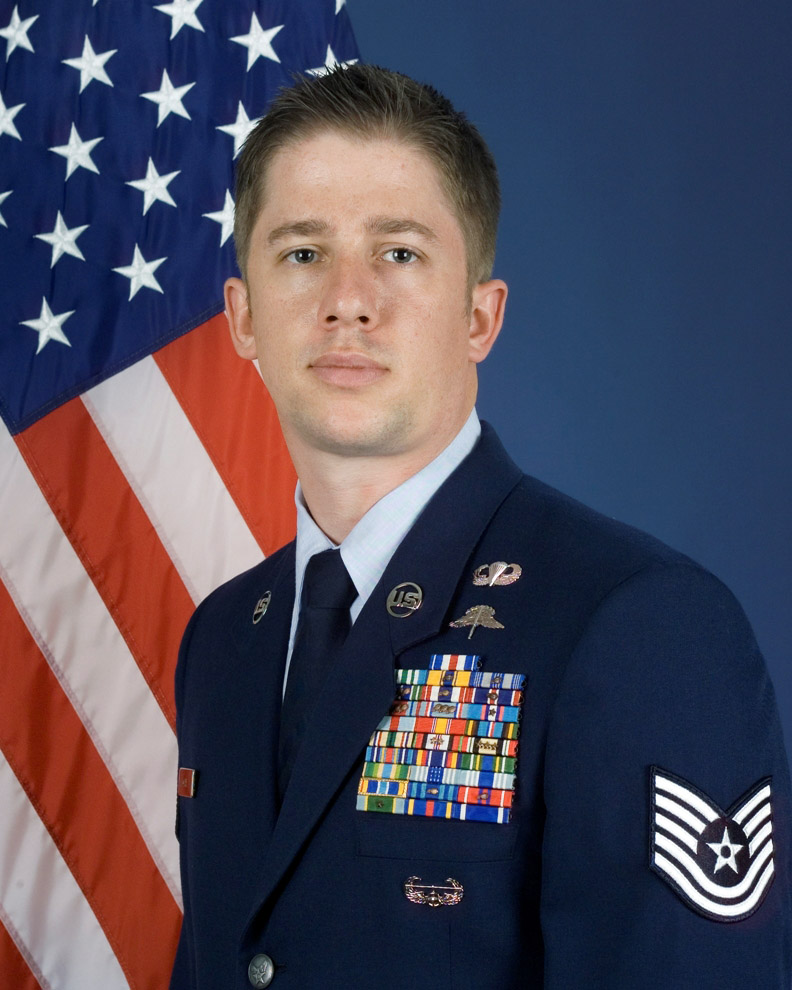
Air Force officials honor 12 Outstanding Airmen of the Year

Tech. Sgt. Earl Covel Jr. of Fort Lewis, Wash., is one of the 12 Outstanding Airmen for 2008.